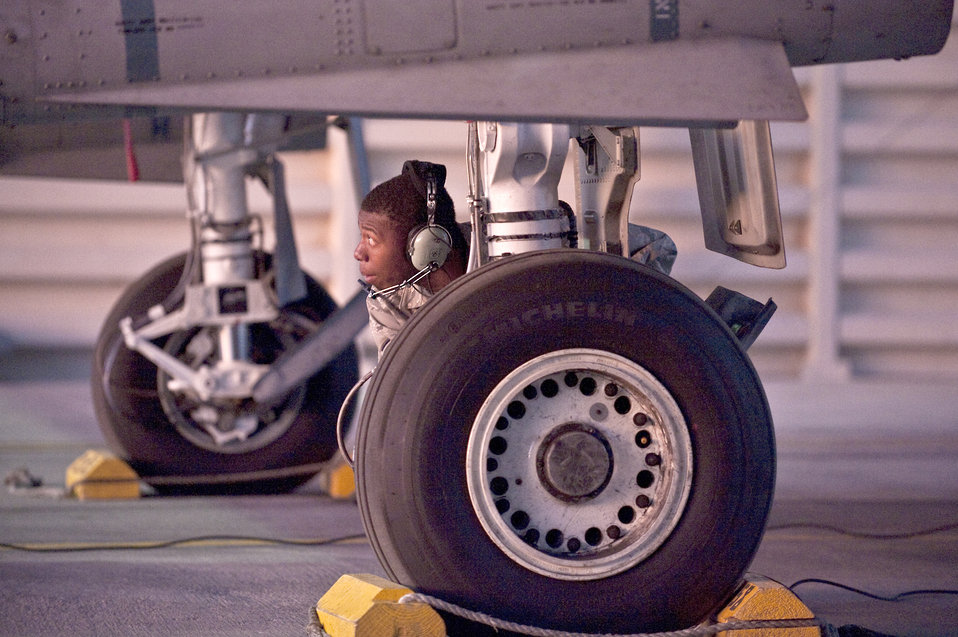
Green Flag West 11-2

Senior Airman Edwin Watkins looks over the landing gear of an A-10 Thunderbolt II before a training mission during the Green Flag West 11-2 exercise Dec. 10, 2010, at Nellis Air Force Base, Nev. The exercise provides a realistic air-land integration training environment for forces preparing to support worldwide combat operations. Airman Watkins is a crew chief with the 23rd Aircraft Maintenance Squadron at Moody AFB, Ga.